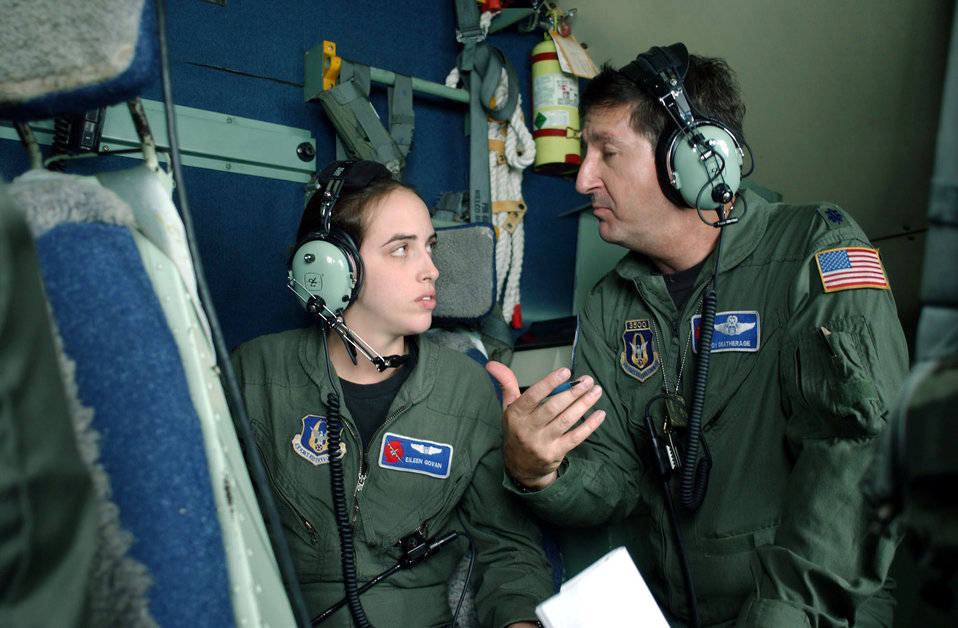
Hurricane Charley

OVER FLORIDA -- Between penetrations of Hurricane Charley's eye in a C-130H aircraft, Lt. Col. Roy Deatherage discusses weather issues with 2nd Lt. Eileen Govan. Colonel Deatherage is a weather instructor, and Lieutenant Govan is a flight meteorologist. Both Airmen are assigned to the 53rd Weather Reconnaissance Squadron, better known as the